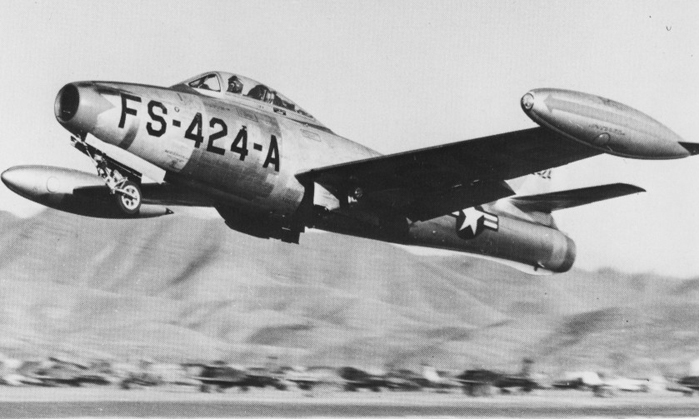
F-84

The 50th Fighter Wing flew a variety of aircraft, including F-84 Thunderjets such as the one pictured above, when it was a Reserve associate unit of the 33rd Fighter Wing. The 50th Space Wing at Schriever Air Force Base, Colo., traces its history back to the 50th FW.